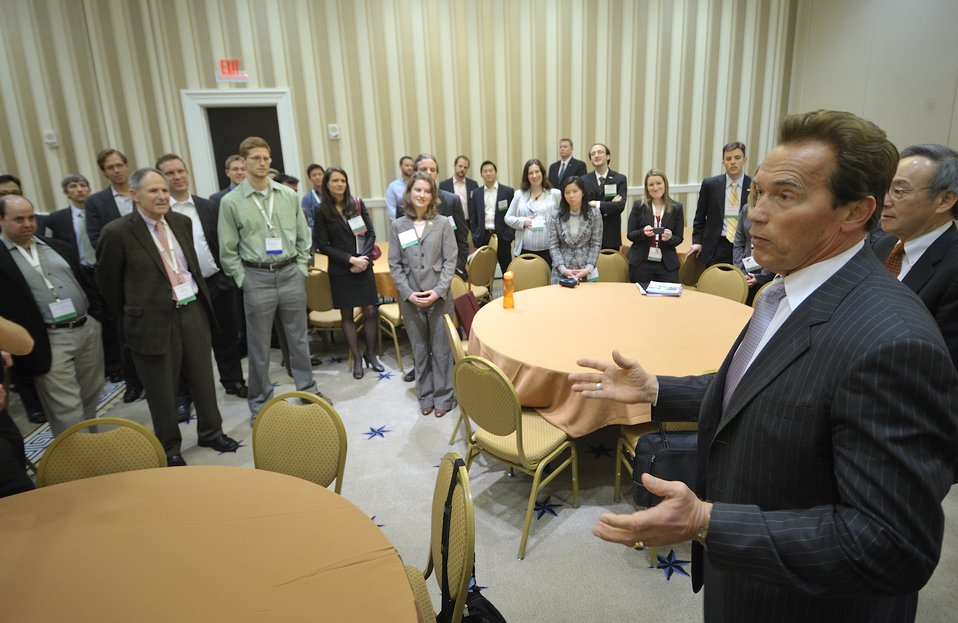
ARPA-E Energy Innovation Summit 2011, 13 of 83

Steven Chu, Secretary, United States Department of Energy and Arnold Schwarzenegger, Former Governor of California surprise graduate students who traveled to the summit.